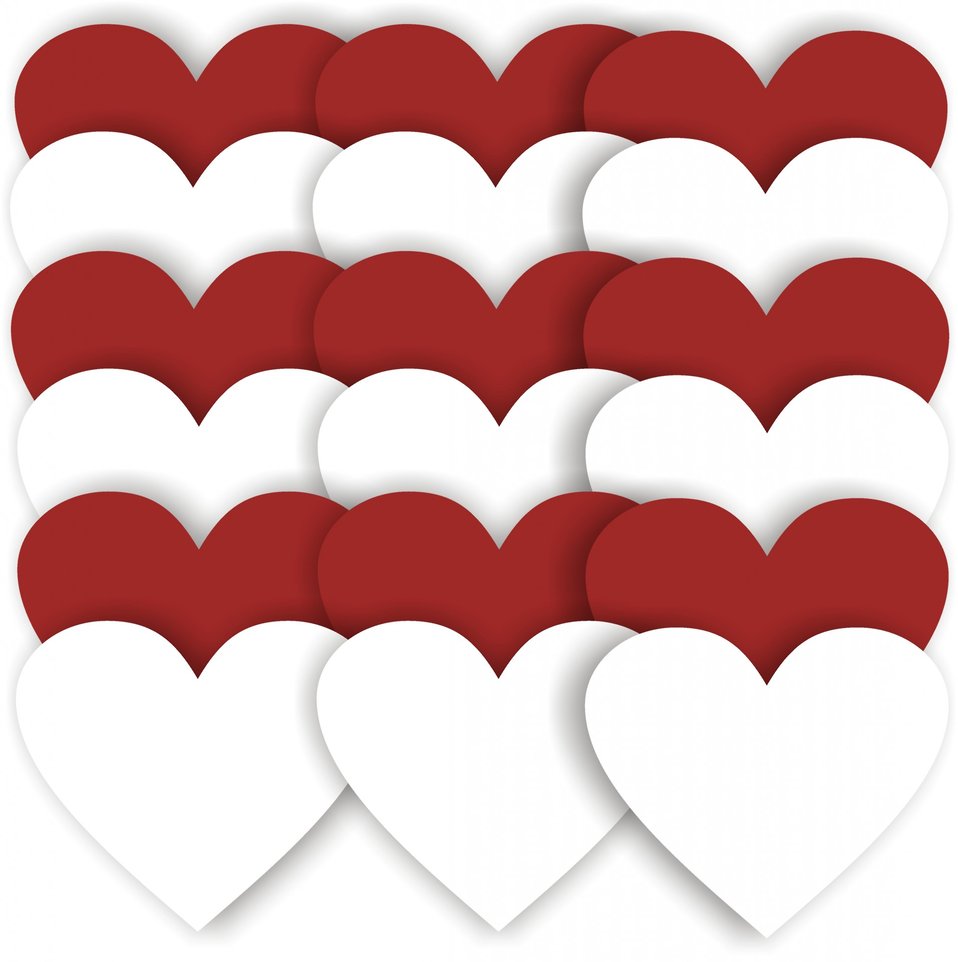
Red and white heart background

Red and white heart shapes.